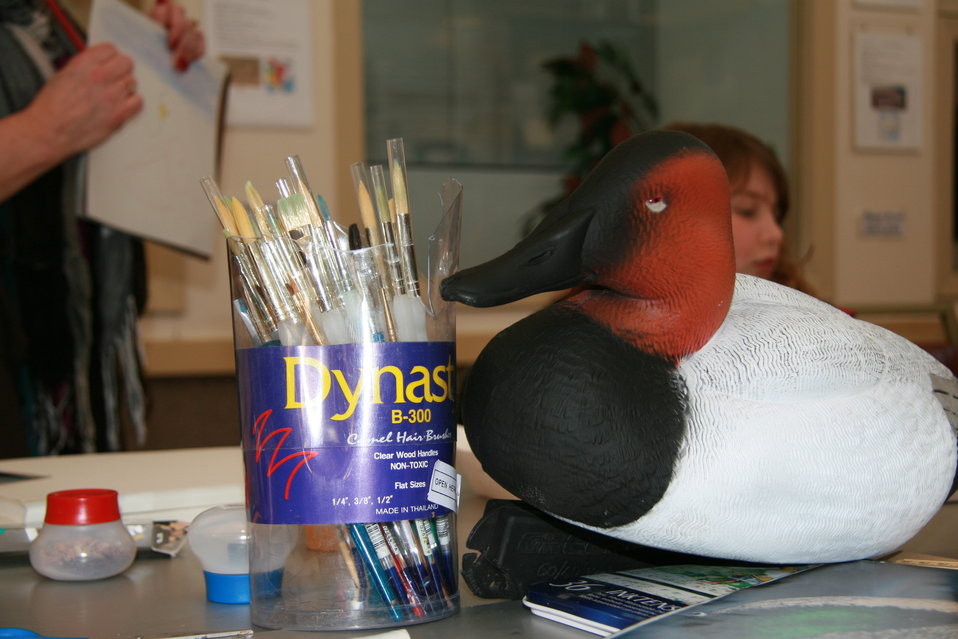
Materials for North Dakota Jr. Duck Stamp Contest

The Jr. Duck Stamp Program is a dynamic education program designed to teach wetland habitat and waterfowl conservation to students in kindergarten through high school.